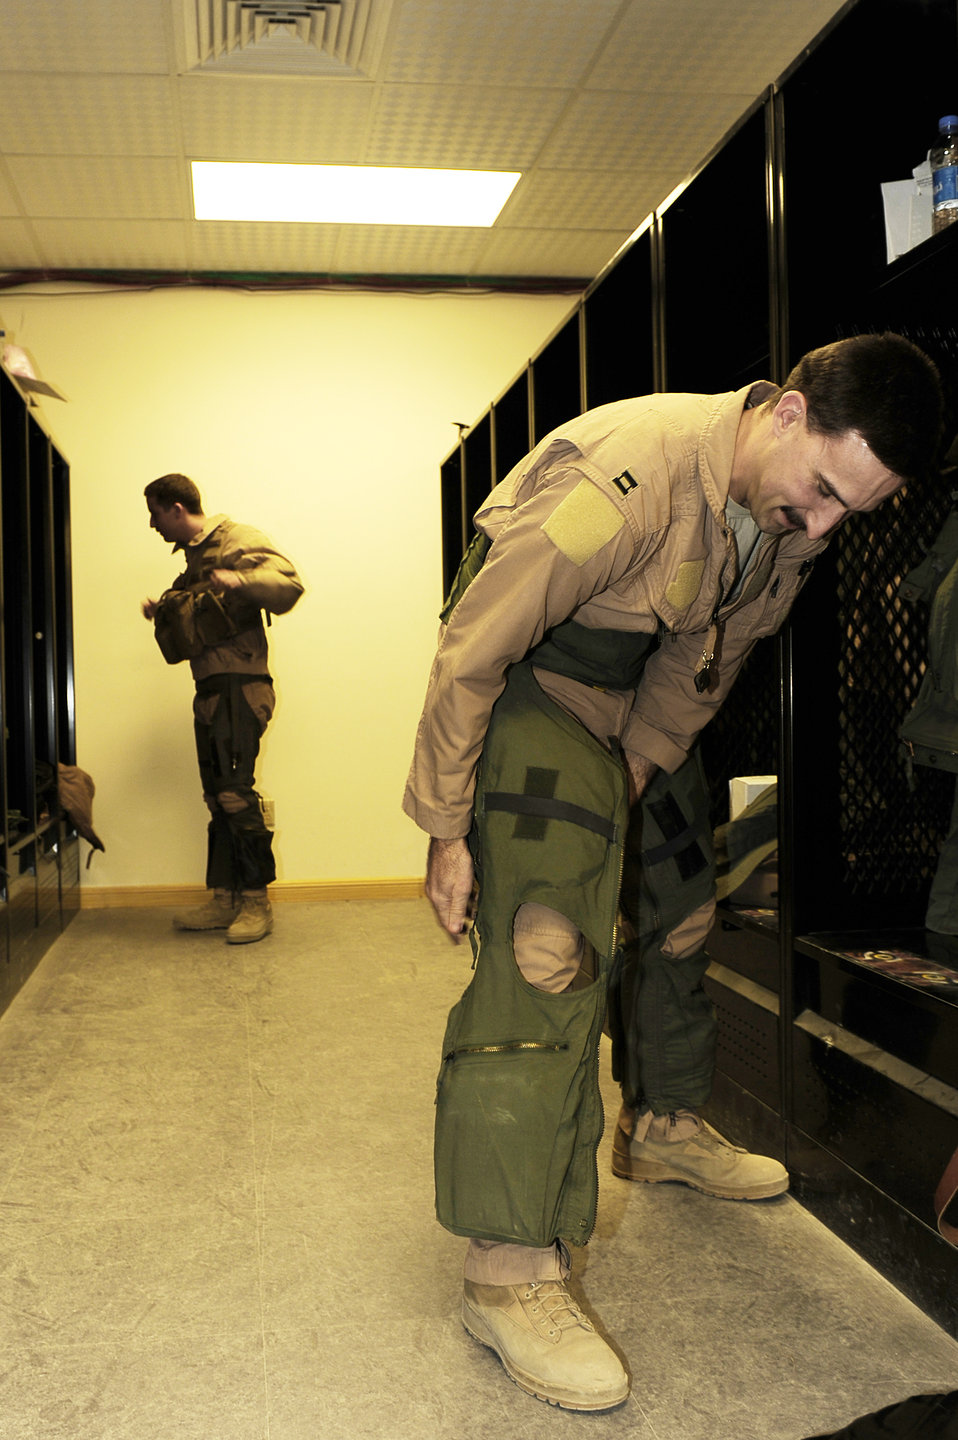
Airmen prepare for night mission at Bagram

Capt. David Snodgrass (left) and Capt. Austin Brown prepare for their flight at Bagram Airfield, Afghanistan, Jan. 4, 2010. Both captains are assigned to the 79th Expeditionary Fighter Squadron, and are deployed from Shaw Air Force Base, S.C.